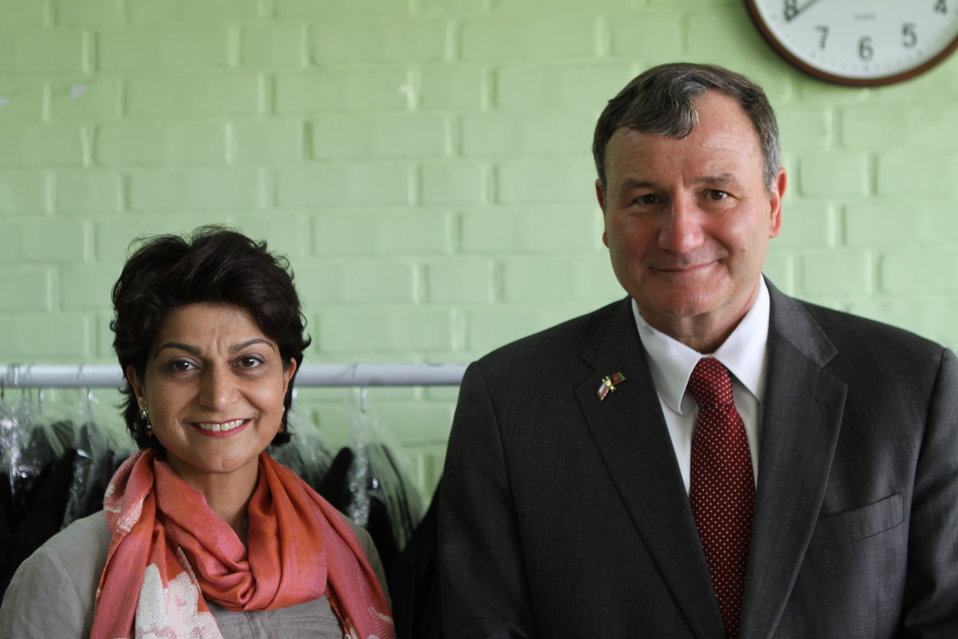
100526 AUAF Graduation 347